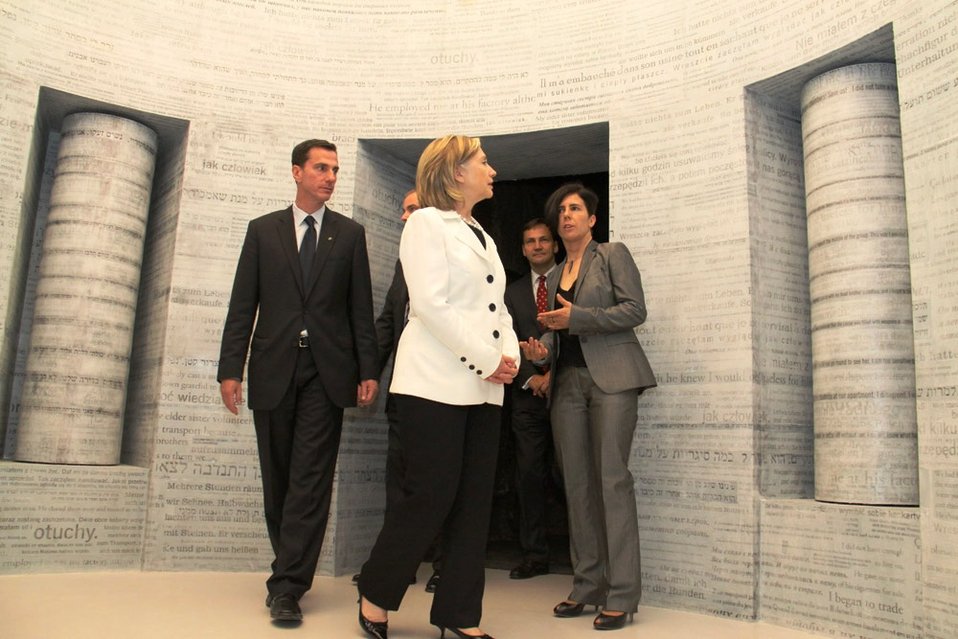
Tour Guide Gawron Explains an Exhibit to Secretary Clinton, Ambasador Feinstein, and Polish Foreign Minister Sikorski

Tour Guide Edyta Gawron explains an exhibit to U.S. Secretary of State Hillary Rodham Clinton, U.S. Ambassador to Poland Lee Feinstein, and Polish Foreign Minister Radoslaw Sikorski at the Schindler Factory Museum in Krakow, Poland, on July 3, 2010.